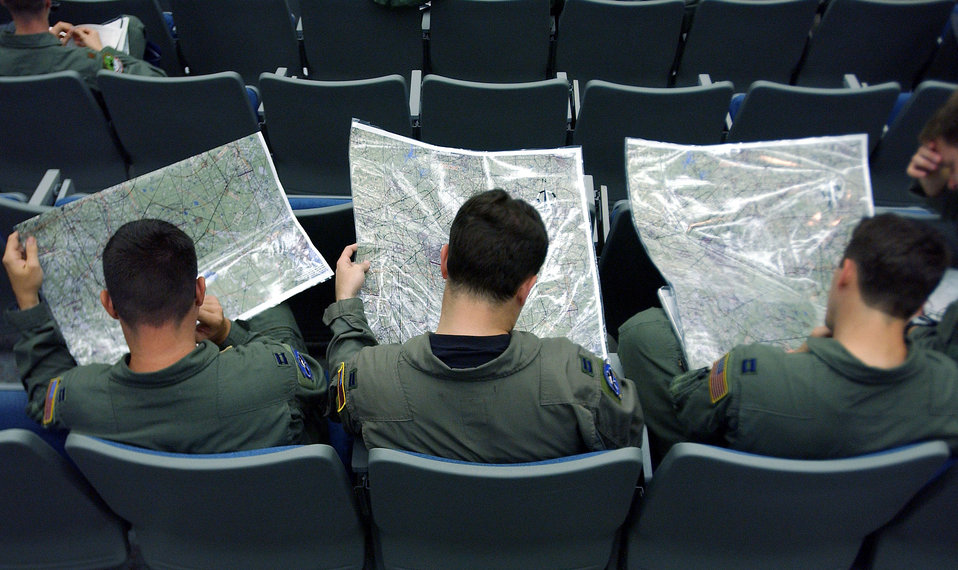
Which way do we go?

POPE AIR FORCE BASE, N.C. -- Aircrew members review flight routes during a crew brief as part of Exercise Large Package Week here May 11. Large Package Week is a joint U.S. Army and U.S. Air Force airdrop exercise designed to enhance service cohesiveness.